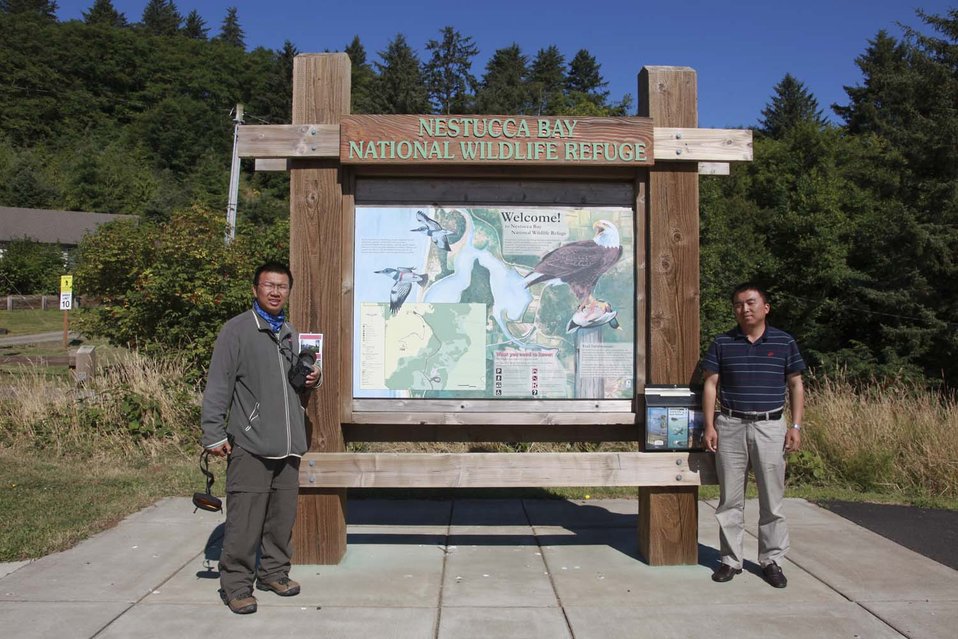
Xu Yingshou and Jia Yifei at Nestucca Bay National Wildlife Refuge